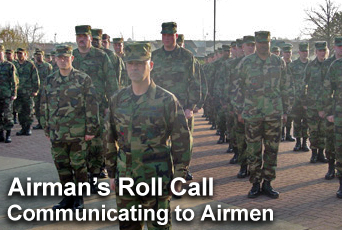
Latest Roll Call

The newest Airman's Roll Call focuses on Chief of Staff of the Air Force contacting Airmen directly.